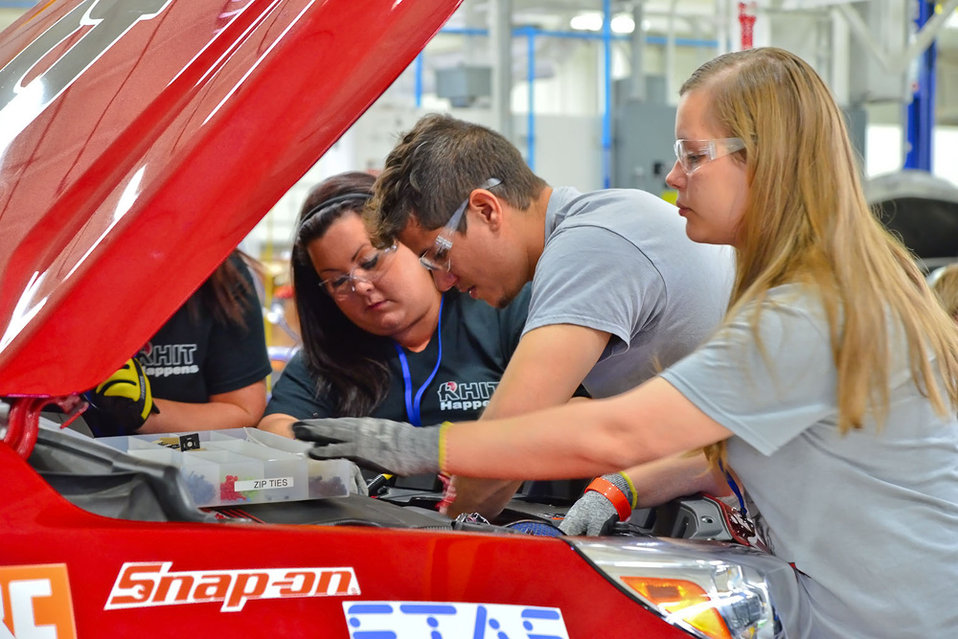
Students from Rose-Hulman Institute of Technology work under the hood of their car at the Year 2 finals in Yuma, Arizona. Rose-Hulman Institute of Technology’s vehicle combines an internal combustion engine that runs on E85 (gasoline blended with 85 percent ethanol) and an electric motor to allow the car to operate in two different modes: all-electric and as a hybrid-electric vehicle running on E85. | Photo courtesy of EcoCAR 2.